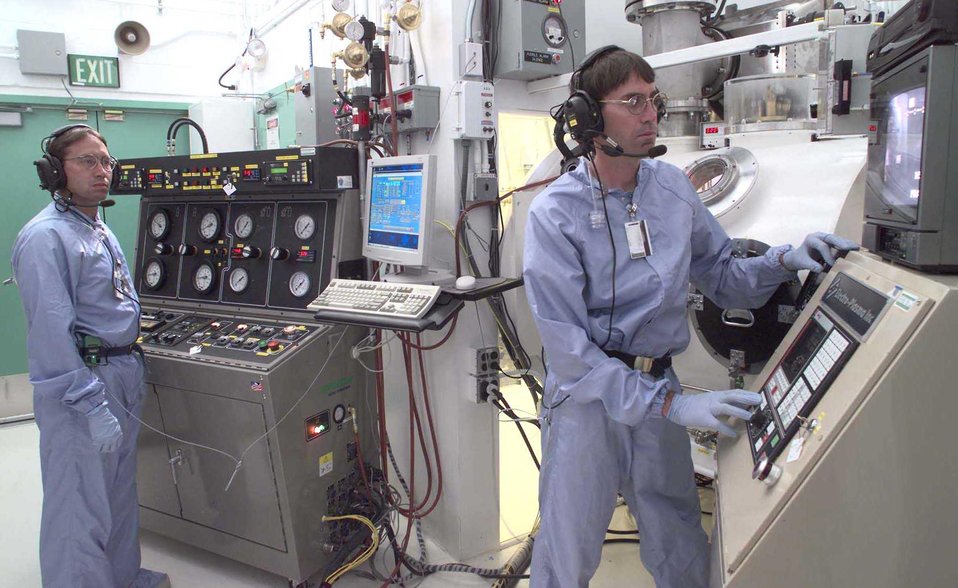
INSIDE LANL'S BERYLLIUM TECHNOLOGY FACILITY.

THE BERYLLIUM TECHNOLOGY FACILITY AT DOE'S LOS ALAMOS NATIONAL LABORATORY IS THE FIRST STATE-OF-THE-ART FACILITY IN THE U.S. DESIGNED SPECIFICALLY FOR WORKING WITH BERYLLIUM.